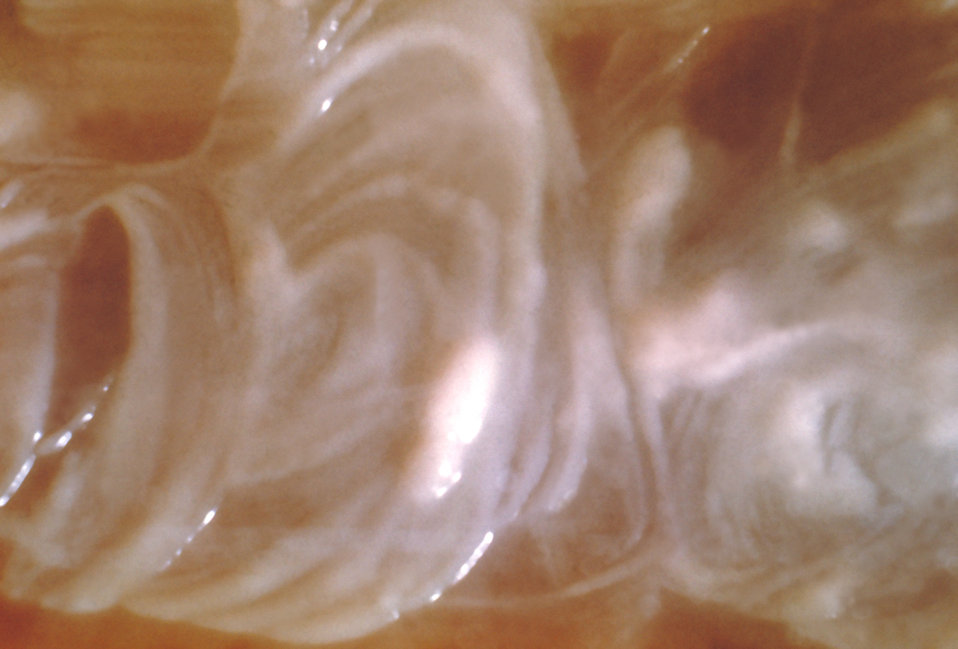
Shown here is a close-up of a Sporothrix schenckii culture during yeast phase.